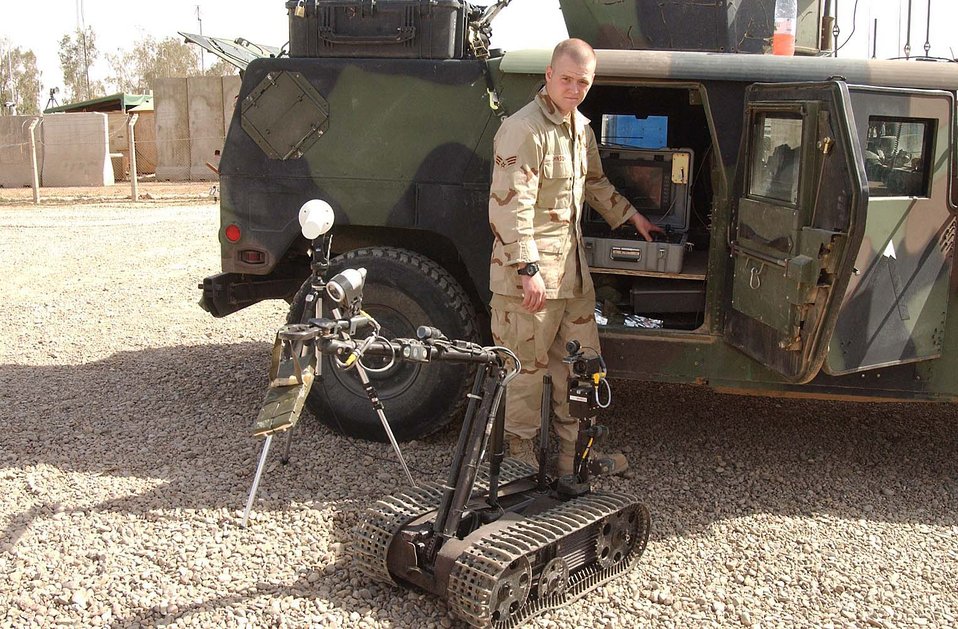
EOD protects people from explosive hazards

BALAD AIR BASE, Iraq -- Senior Airman Chris Johnson demonstrates how